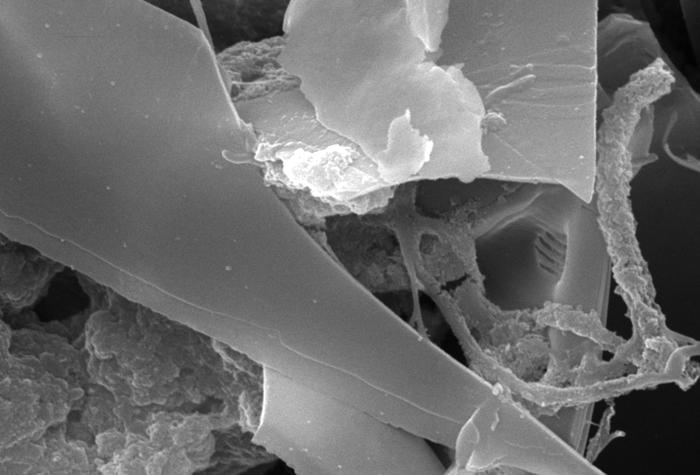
This scanning electron micrograph (SEM) of an untreated water specimen extracted from a wild stream, which is mainly used to control flooding during inclement weather, revealed the presence of unidentified organisms, which included bacteria, protozoa, and algae. For a digitally-colorized version of this image see PHIL 11695.